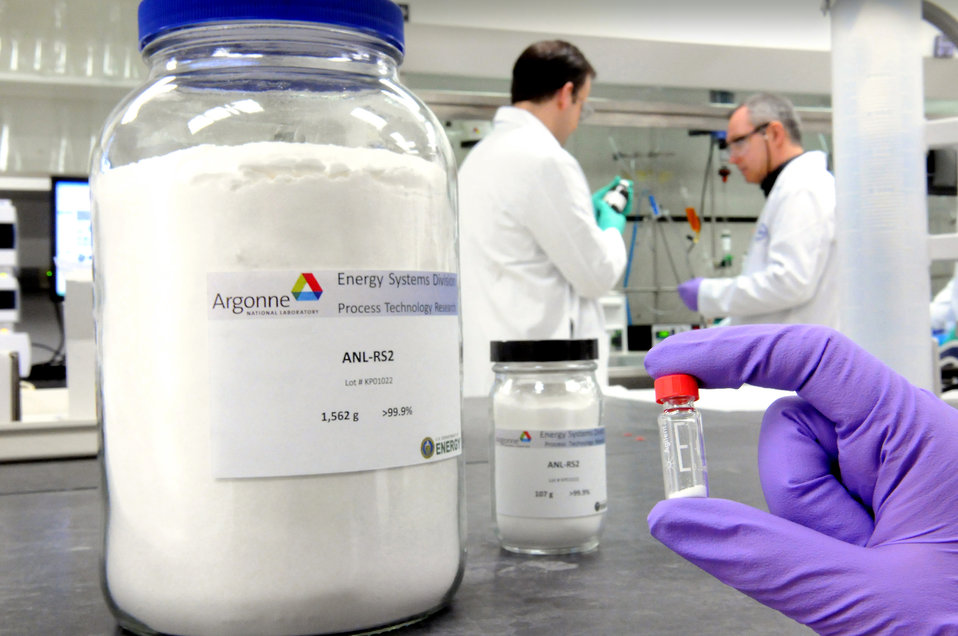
Argonne researchers have developed and improved, scalable process for the synthesis of a lithium-ion battery overcharge protection REOX Shuttle.

Initial discovery amounts of battery materials are small compared to the kilo-scale amounts needed for validation of new battery technologies. Argonne's new Advanced Battery Materials Synthesis and Manufacturing R&D Program is focused on scalable process R&D to produce advanced battery materials in sufficient quantity for industrial testing. This work is intended to support domestic battery manufacturing and to enable the transition of new materials and technology to the market.